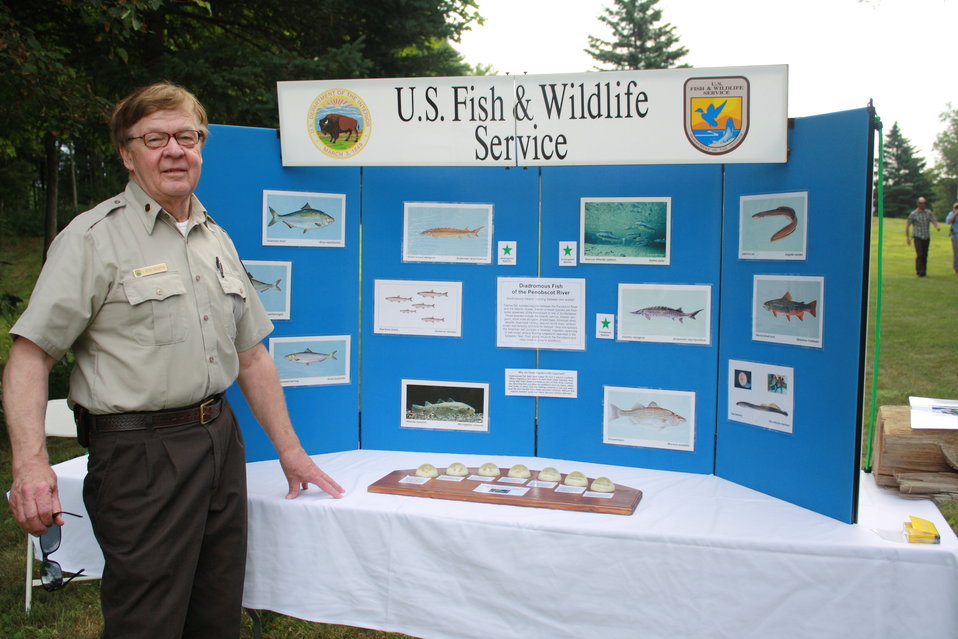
Veazie Dam Removal

Peter Steenstra of our Maine Fisheries Program Complex in front of his U.S. Fish and Wildlife Service exhibit.